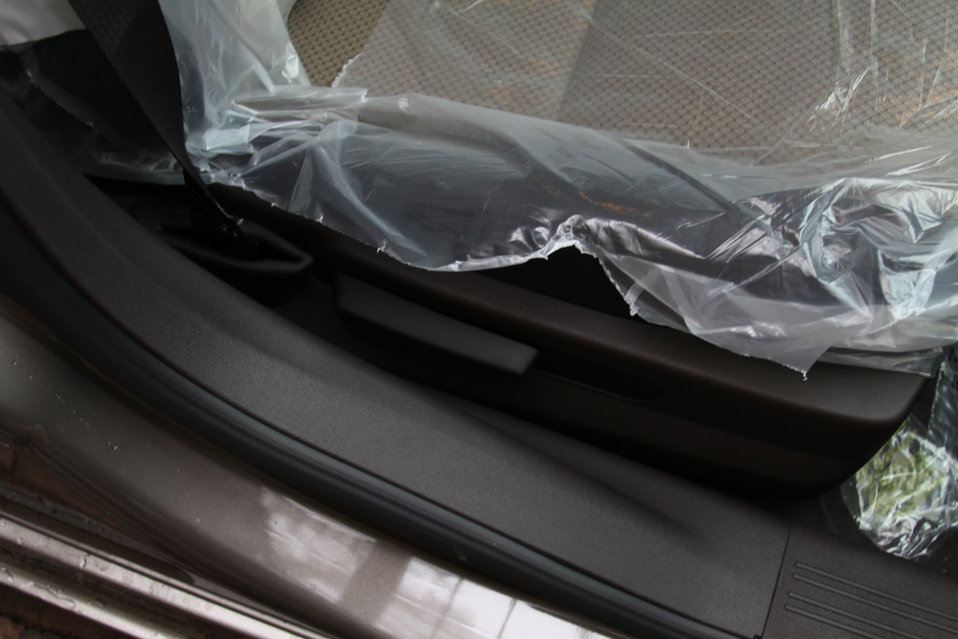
FCC Official Vehicle Tour